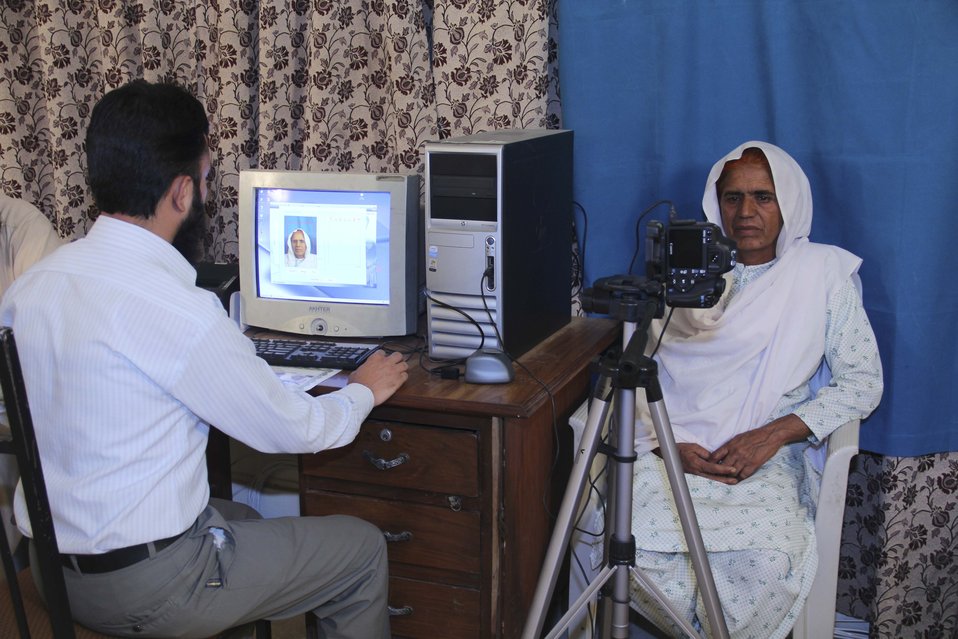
Citizens Damage Compensation Program